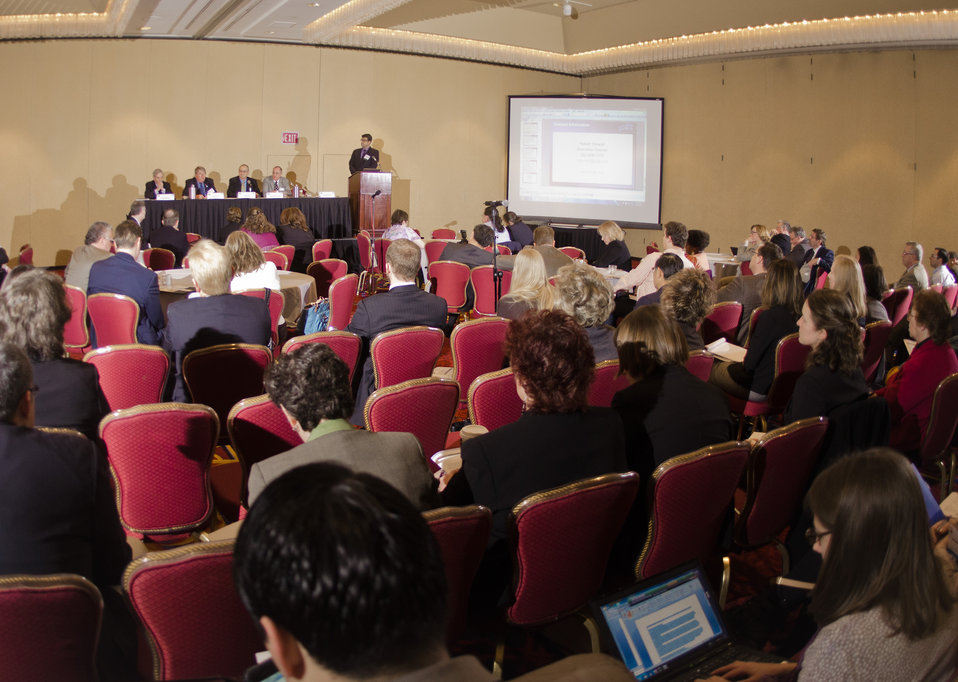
Agriculture’s Rural Development Chief of Staff John Padalino moderated a question and answer period for the Rural Development session, “Why Every American Should Care About the Future of Rural Water,” at the 2012 Agricultural Outlook Forum, “Moving Agriculture Forward, Growing, Innovating and Celebrating 150 Years” held at the Crystal Gateway Marriott Hotel, Arlington, Virginia, on Friday, February 24, 2012. This year’s forum coincides with the 150th anniversary of the Department of Agriculture addressing economics, marketing, research, food safety, nutrition, conservation, rural development, alternative energy, trade and many other agricultural issues.